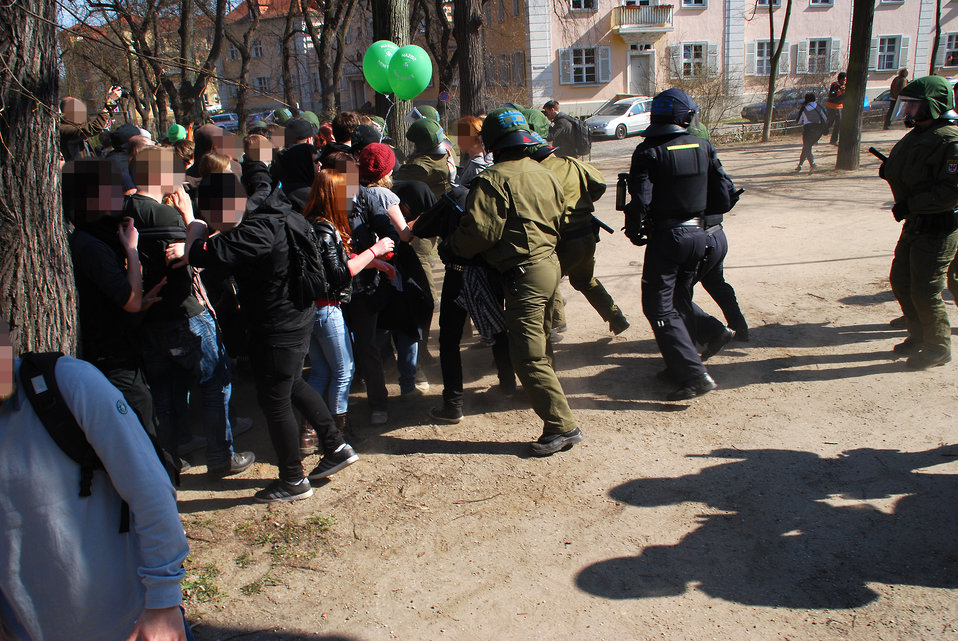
Proteste gegen den Nazi-Aufmarsch am 24.3.2012 in Frankfurt (Oder)